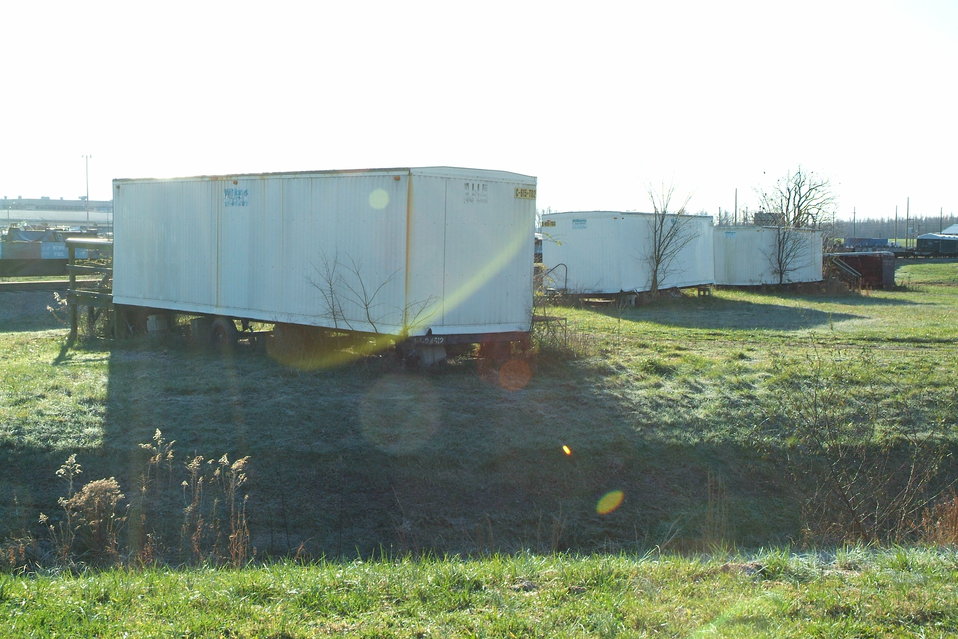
Cost-Efficient Work Rids Paducah Site of Old Facilities

Old trailers that had sat for decades in the southwestern part of the Paducah site were cut up and placed in containers so that the debris could be placed in the site’s industrial landfill.